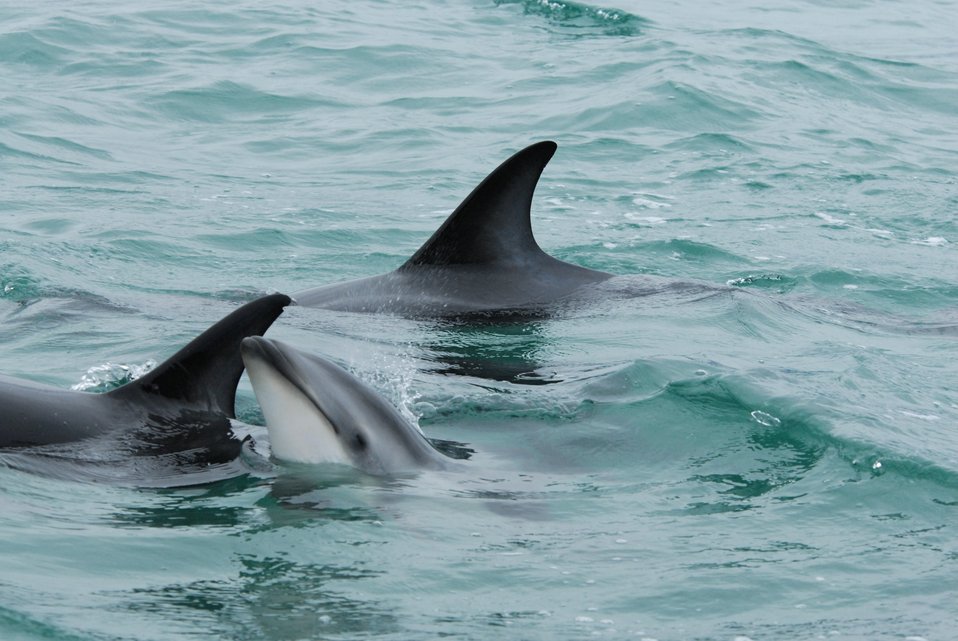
Dusky dolphin (Lagenorhynchus obscurus)